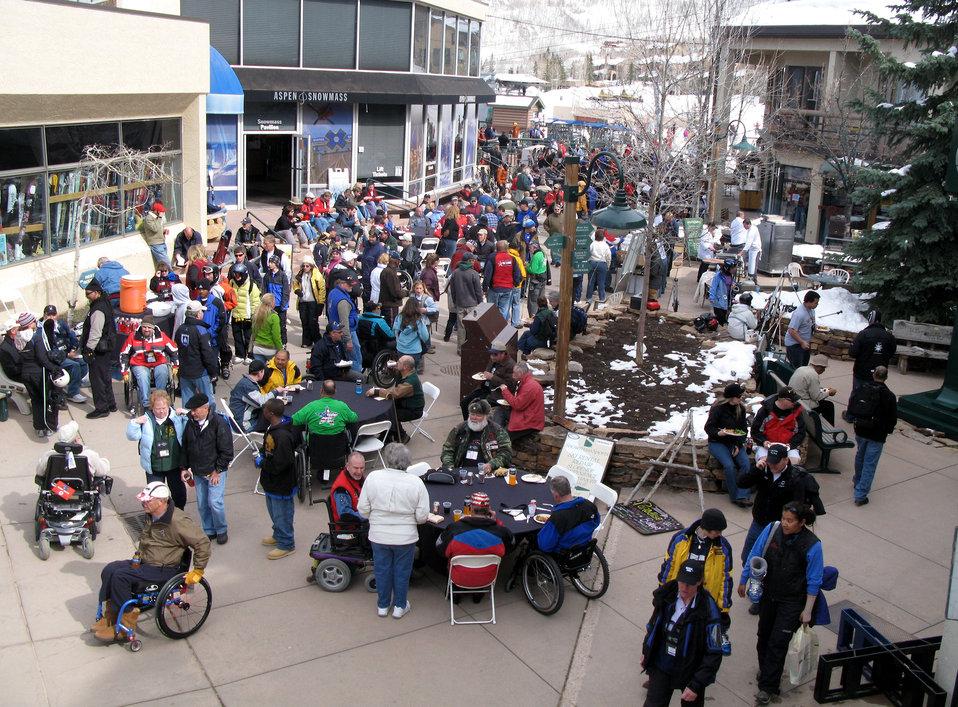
National Disabled Veterans Winter Sports Clinic

Participants in the 23rd annual National Disabled Veterans Winter Sports Clinic are welcomed to Snowmass Village, Colo., March 29 with an opening-day